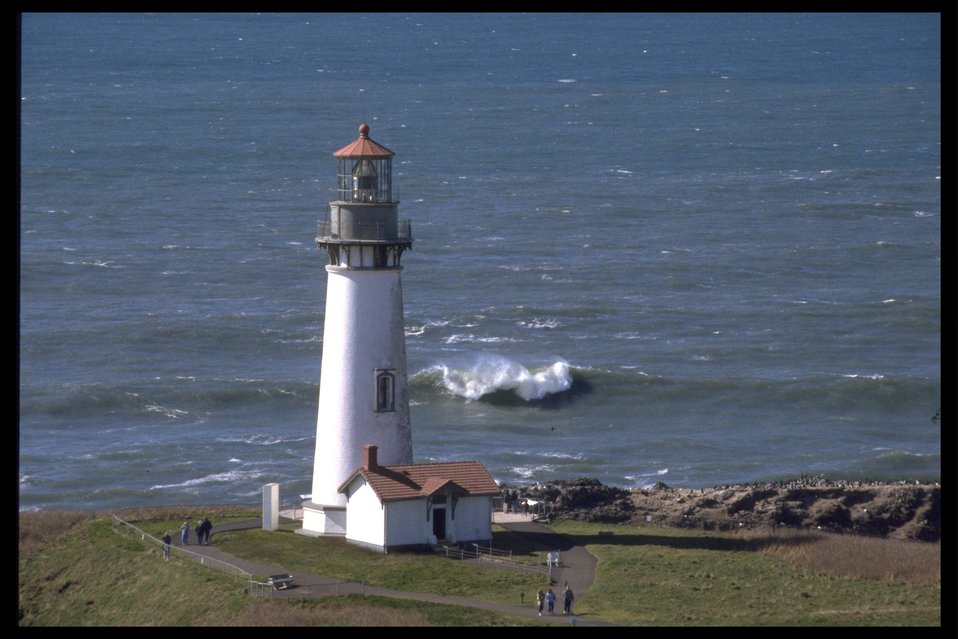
Yaquina Head Lighthouse.